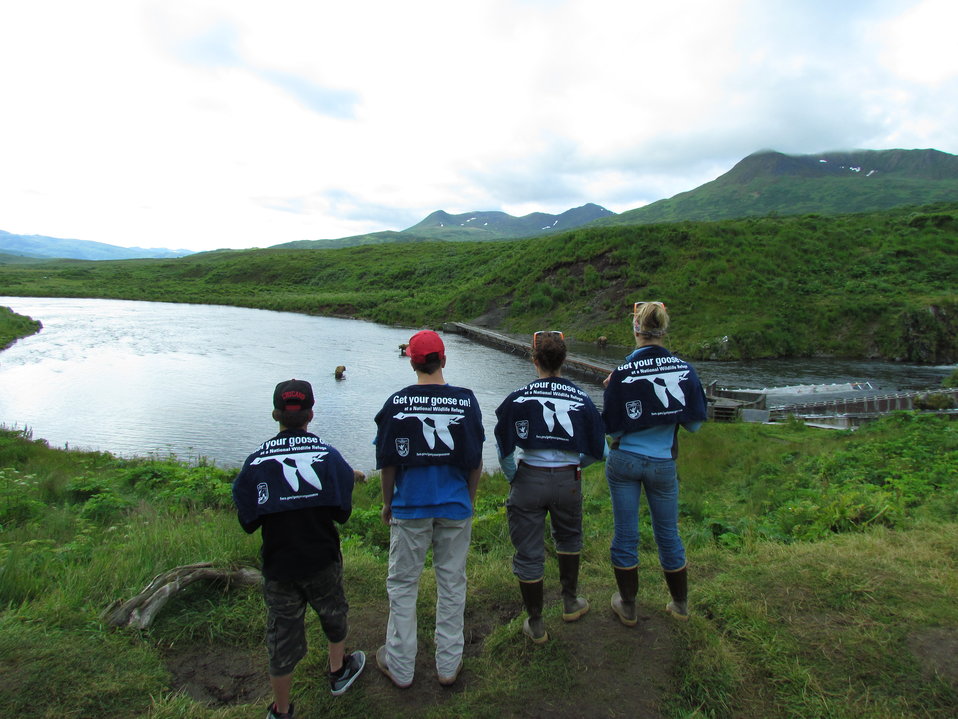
Get Your Goose On! - Alaska Style

Youth Conservation Corp Crew: Shane Davis, Lachlan Kirven, Iris Blakeslee and Anelise Zimmer with Kodiak Brown Bears in the River (Dog Salmon River).

Credit: Shelly Lawson / USFWS

The Kodiak National Wildlife Refuge is a United States National Wildlife Refuge in the Kodiak Archipelago in southwestern Alaska, United States.

The Kodiak National Wildlife Refuge includes the southwestern two-thirds of Kodiak Island, Uganik Island, the Red Peaks area of Afognak Island and all of Ban Island in the archipelago. It encompasses 1,990,418 acres (8,054.94 km2).[2] The refuge is administered from offices in Kodiak.

The refuge contains seven major rivers and about 100 streams. It is a spawning ground for all six species of Pacific Ocean salmon, trout and several other fish species, as well as a nesting ground for 250 species of bird, many of which feed on salmon. The refuge has only six native species of mammals: Kodiak brown bear, red fox, river otter, ermine, little brown bat and tundra vole. The non-native mammals Sitka deer, mountain goat, Roosevelt elk, snowshoe hare and beaver were introduced to the archipelago between the 1920s and 1950s and are now hunted and trapped.

The climate of the refuge is that of southern Alaska, mild and rainy. Many areas in the refuge are densely forested with Sitka Spruce at lower elevations. There are grasslands in drier areas and at higher elevations. The refuge contains several small glaciers.